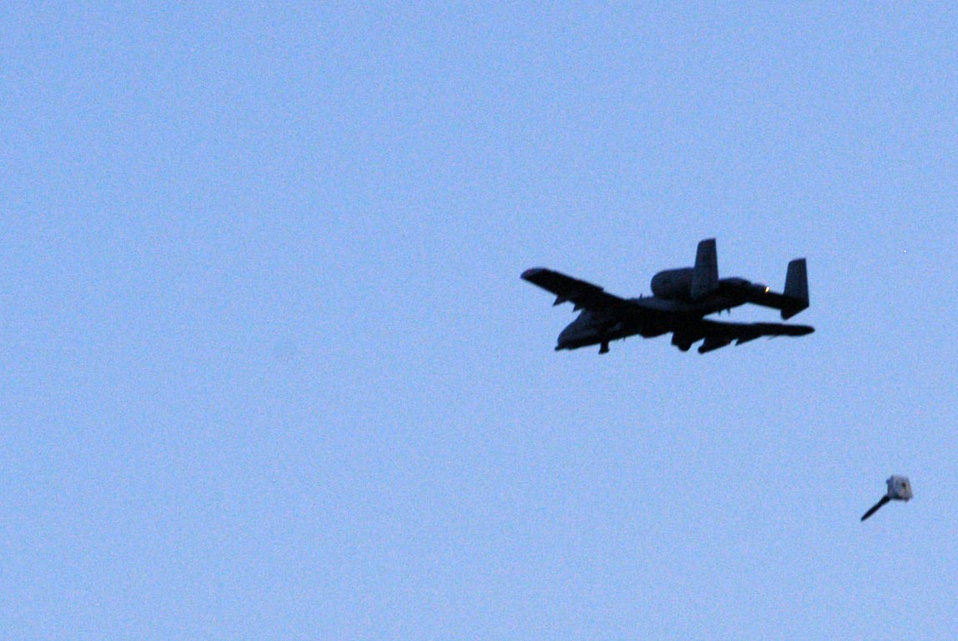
Range keepers help pilots stay combat ready

An A-10 Thunderbolt II from the 303rd Fighter Squadron releases a 500-pound, high-drag, practice bomb during a night sortie June 19 over Cannon Range near Fort Leonard Wood, Mo. Pilots from the 303rd FS, part of the Air Force Reserve's 442nd Fighter Wing at Whiteman Air Force Base, Mo., use the range daily to conduct bombing and strafing training in the A-10.